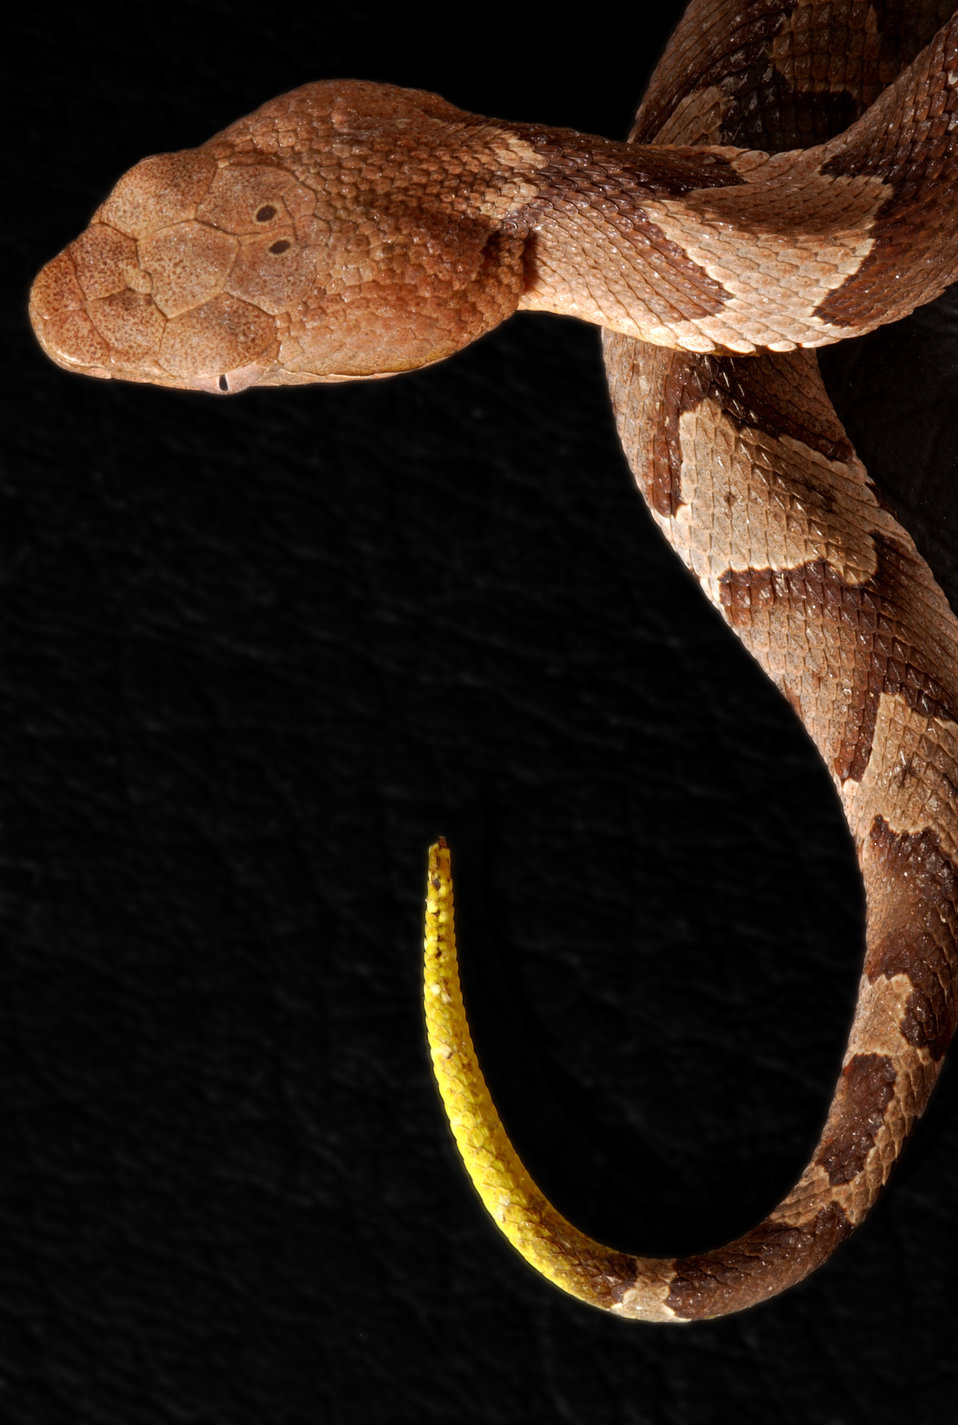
This 2008 photograph included the head and tail regions of a juvenile venomous 'Southern copperhead' snake, Agkistrodon contortrix, which was found coiled in a Decatur, Georgia basement.